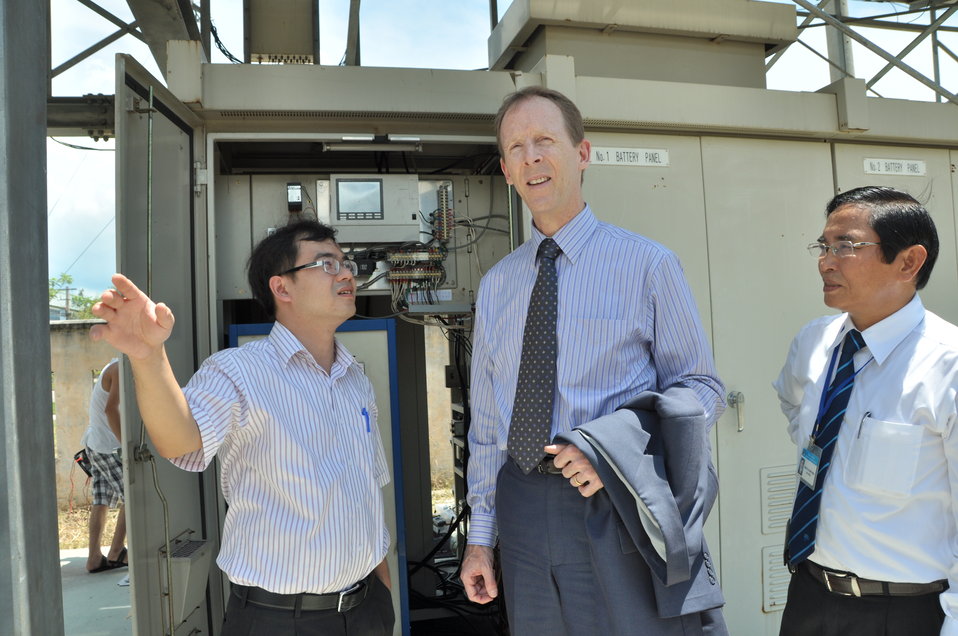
USAID Mission Director visits Danang University of Technology

Danang, July 17, 2013